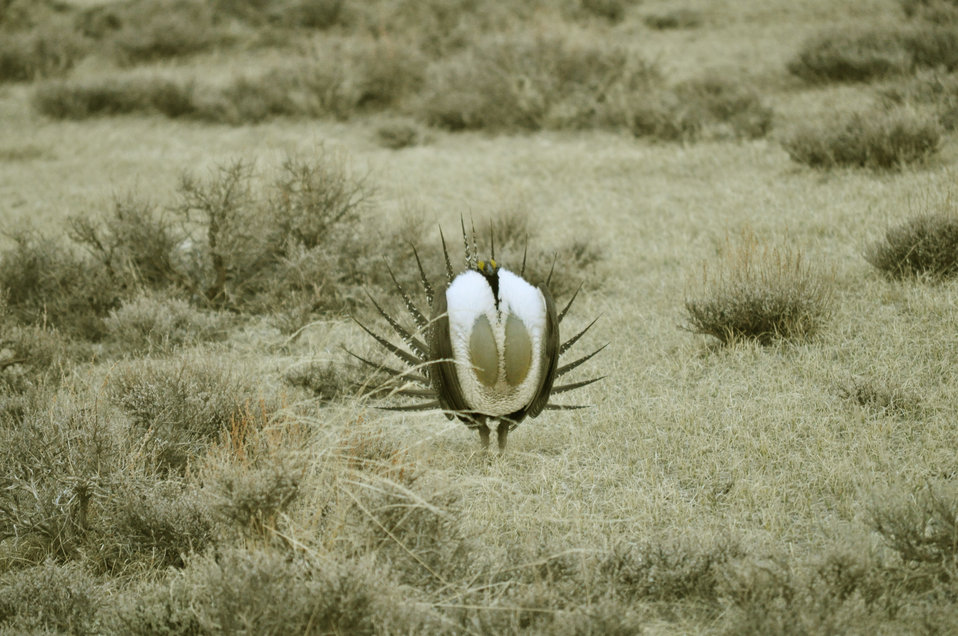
Male greater sage-grouse struts at lek (dancing or mating grounds) to attract females near Bodie, California.